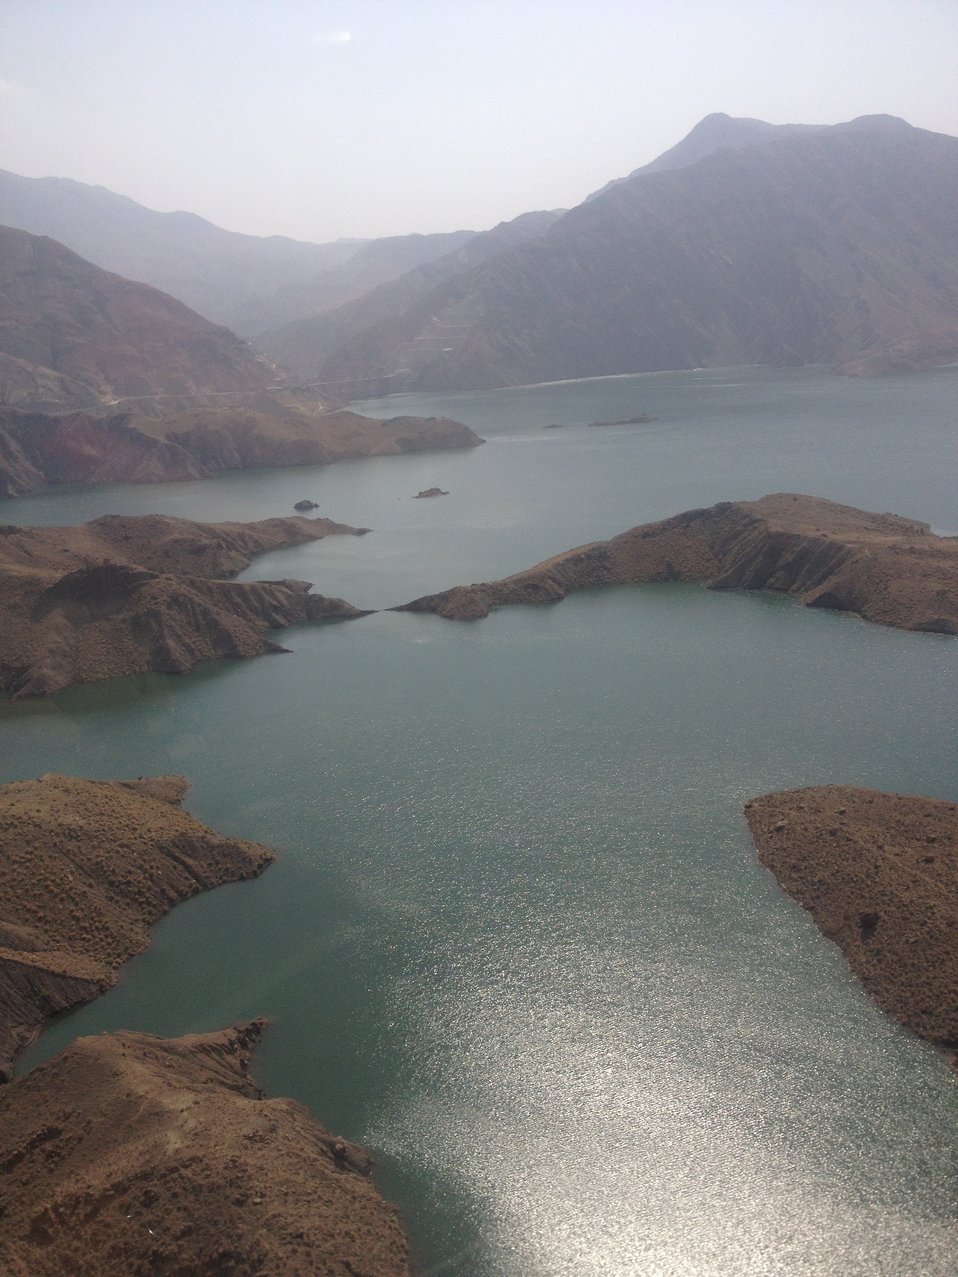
Gomal Zam 05